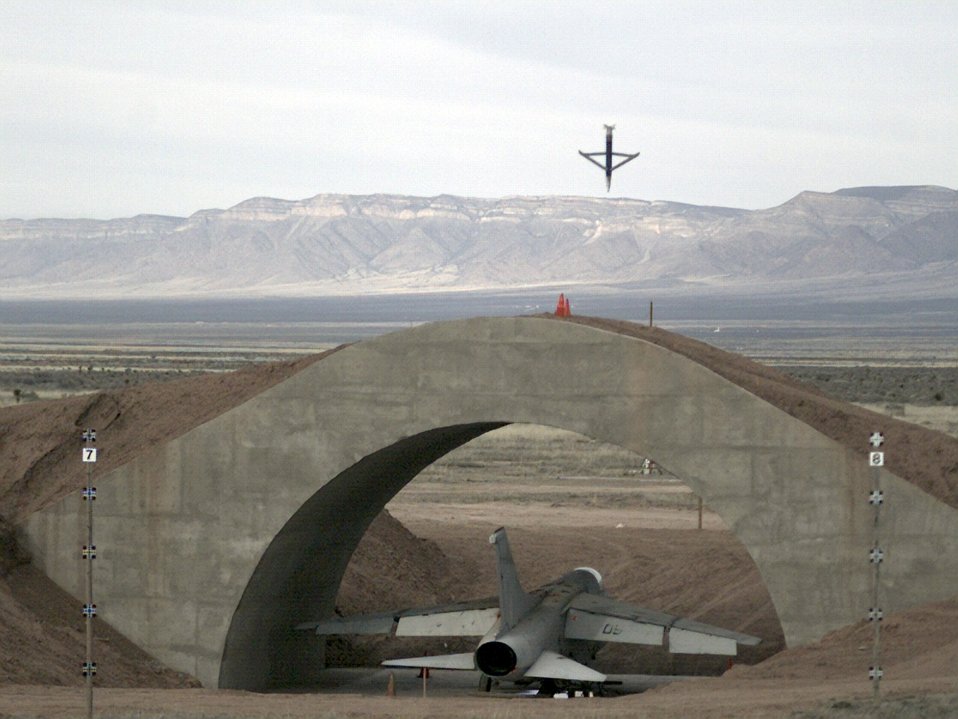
SDB testing

EGLIN AIR FORCE BASE, Fla. -- A small-diameter bomb drops toward its target. The small diameter bomb program begins operational testing in October.